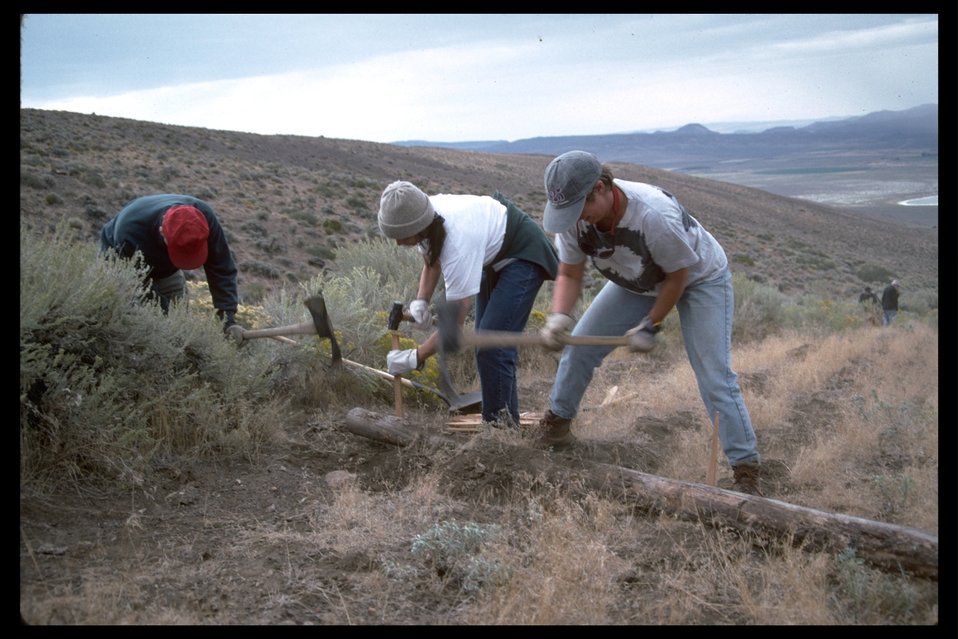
Pueblo Mountain WSA, a group photo of Sierra Club volunteers placing wooden water bars near Arizona Creek. (WSA 2-81)